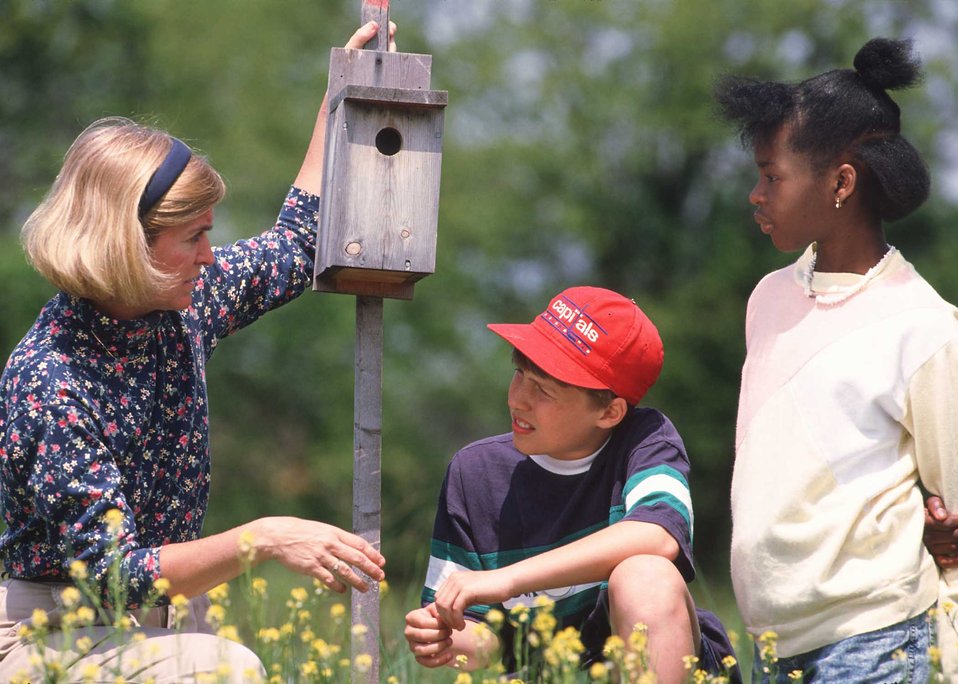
Students at Centreville Middle School learn about bird houses as part of an outdoor classroom being built on the school grounds.